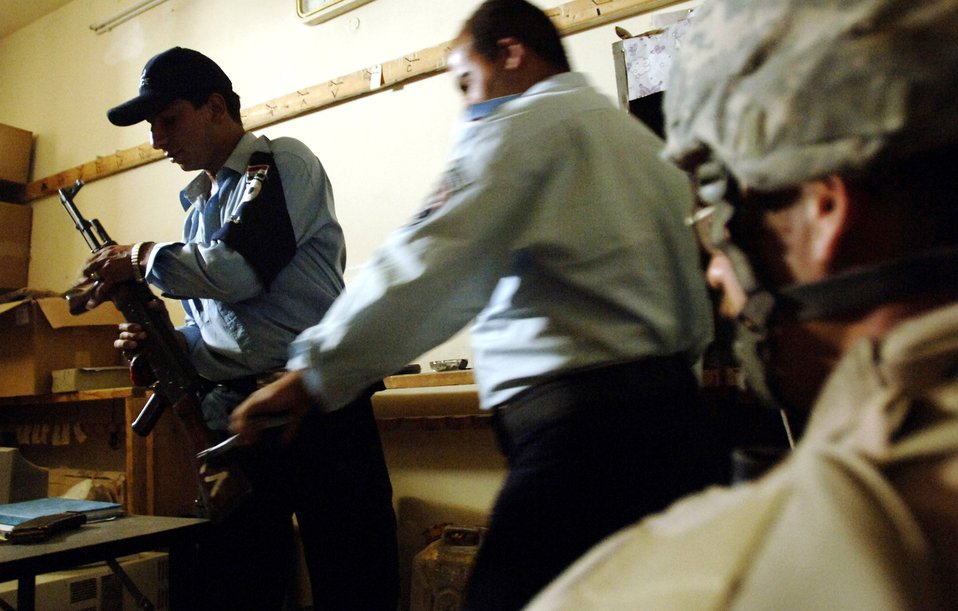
Dangerous road to progress

Iraqi police return weapons during a mentoring session with Staff Sgt. Michael Ellis May 9 in a Baghdad police station. Members of Det. 3, 732nd Expeditionary Security Forces Squadron, perform police transition team duties of mentoring, coaching and teaching Iraqi police.